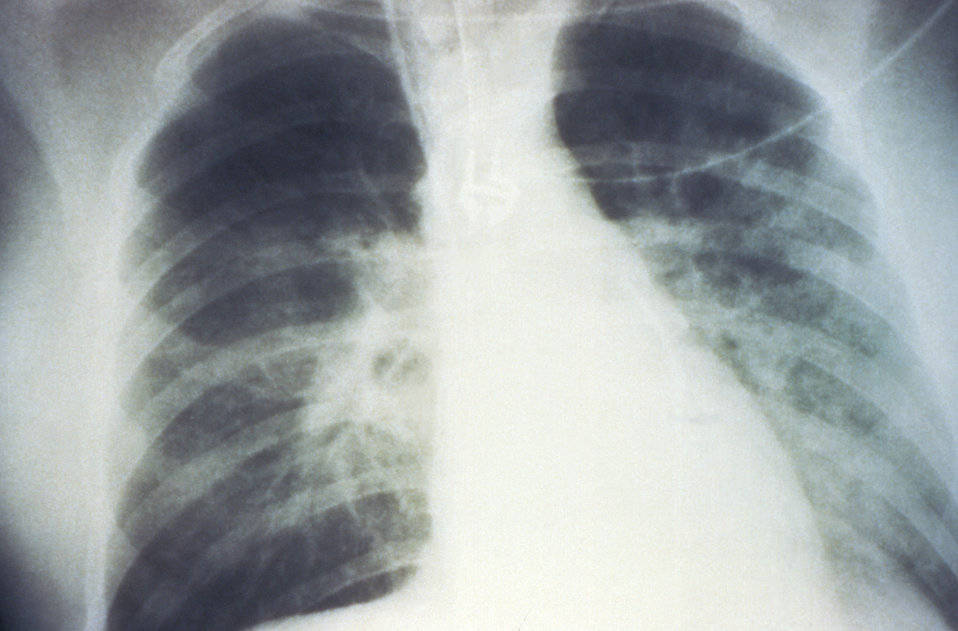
This AP chest x-ray reveals the mid-staged bilateral pulmonary effusion due to hantavirus pulmonary syndrome, or HPS.